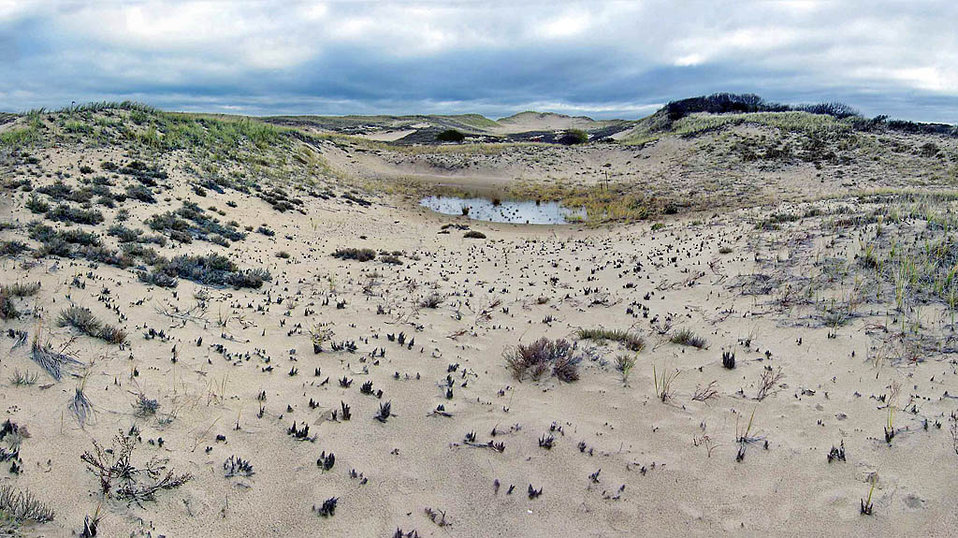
Dunes at Parker River National Wildlife Refuge, Massachusetts.